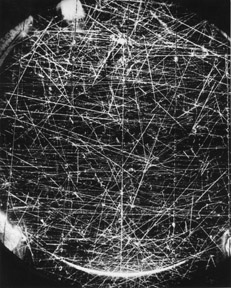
Billion-volt atomic particles in Brookhaven Cosmotron. c. 1957